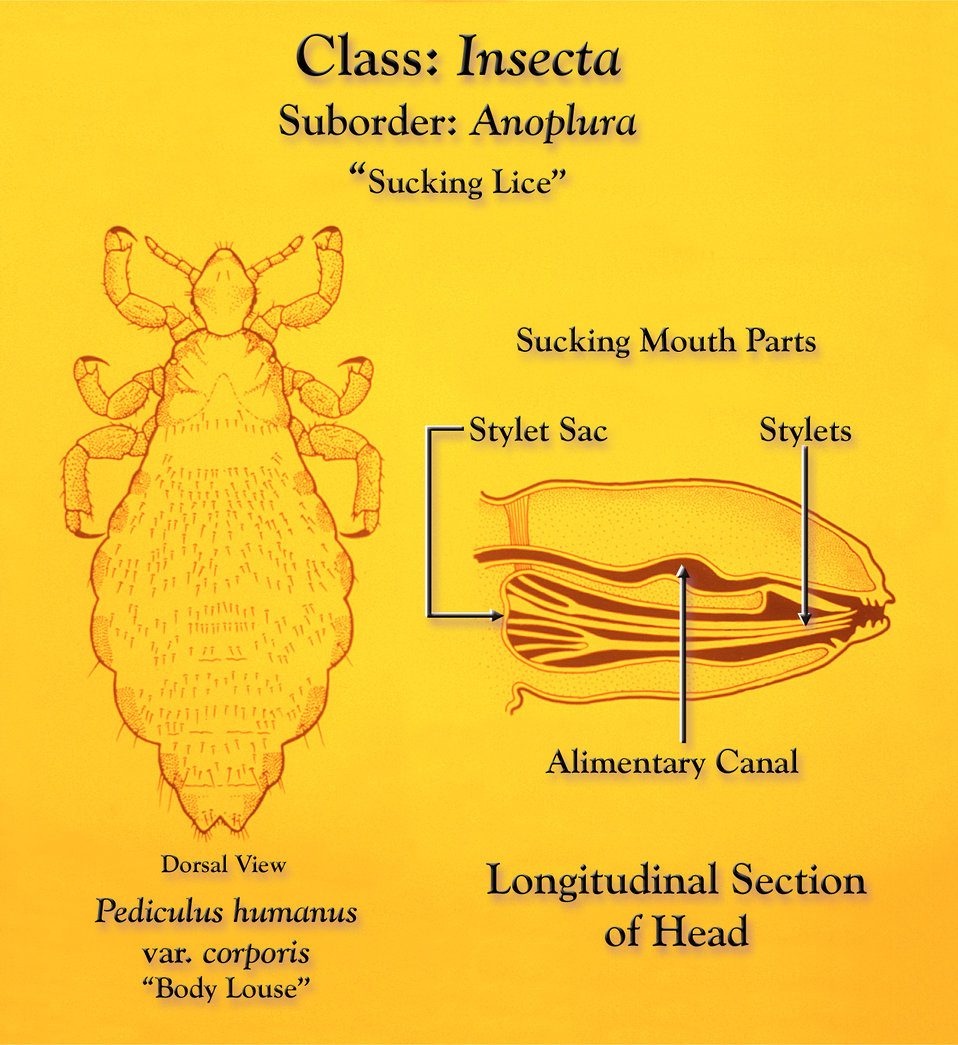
This illustration depicts a dorsal view (Lt), and an enlarged longitudinal mid-sagittal view (Rt) of the head region of a Pediculus humanus var. corporis louse, which is a member of the Order Anoplura, or 'sucking lice'.